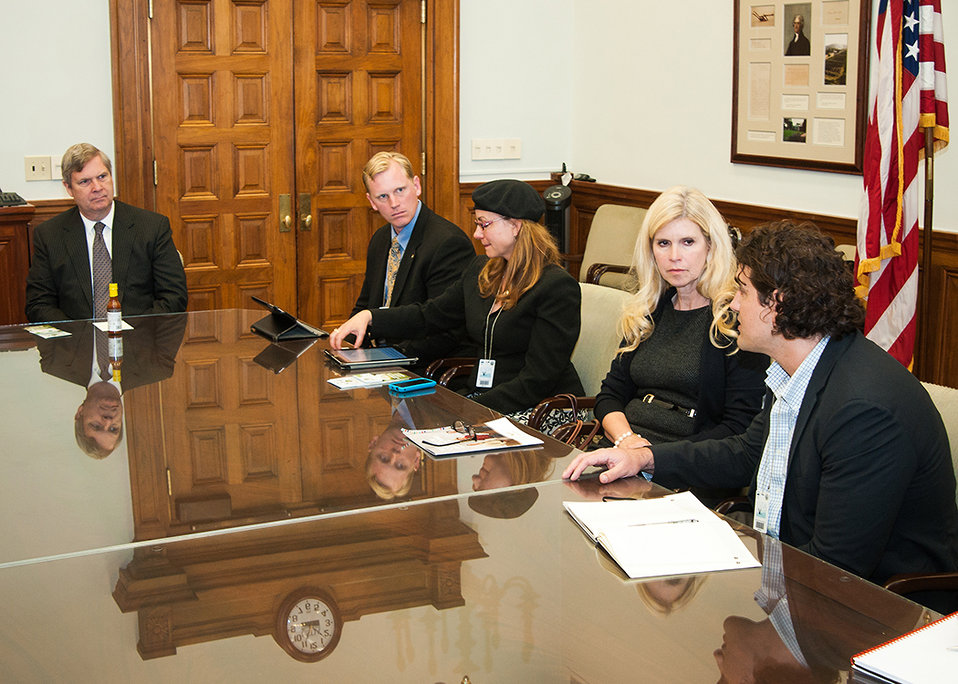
(L to R) Agriculture Secretary Tom Vilsack, Archi’s Acres and Veteran’s Sustainable Agriculture Training (VSAT) users Colin and Karen Archipley, Veteran’s Valor Fund representative Filomena Spiese, and University of Vermont and Archies Acres and chief scientist for Archi’s Acres Jeff Spees discusses discussed the success of Archi’s Acres and the Veteran’s Sustainable Agriculture Training (VSAT) with Agriculture Secretary Tom Vilsack at the U.S. Department of Agriculture (USDA)in Washington, D.C. on Tuesday, Apr. 3, 2013. Archi’s Acres offered the experience and knowledge they have with their farm and the Veteran’s Sustainable Agriculture Training (VSAT) program and discussed economic options available through USDA for active-duty military, veterans and anyone interested in sustainable agriculture as a career.